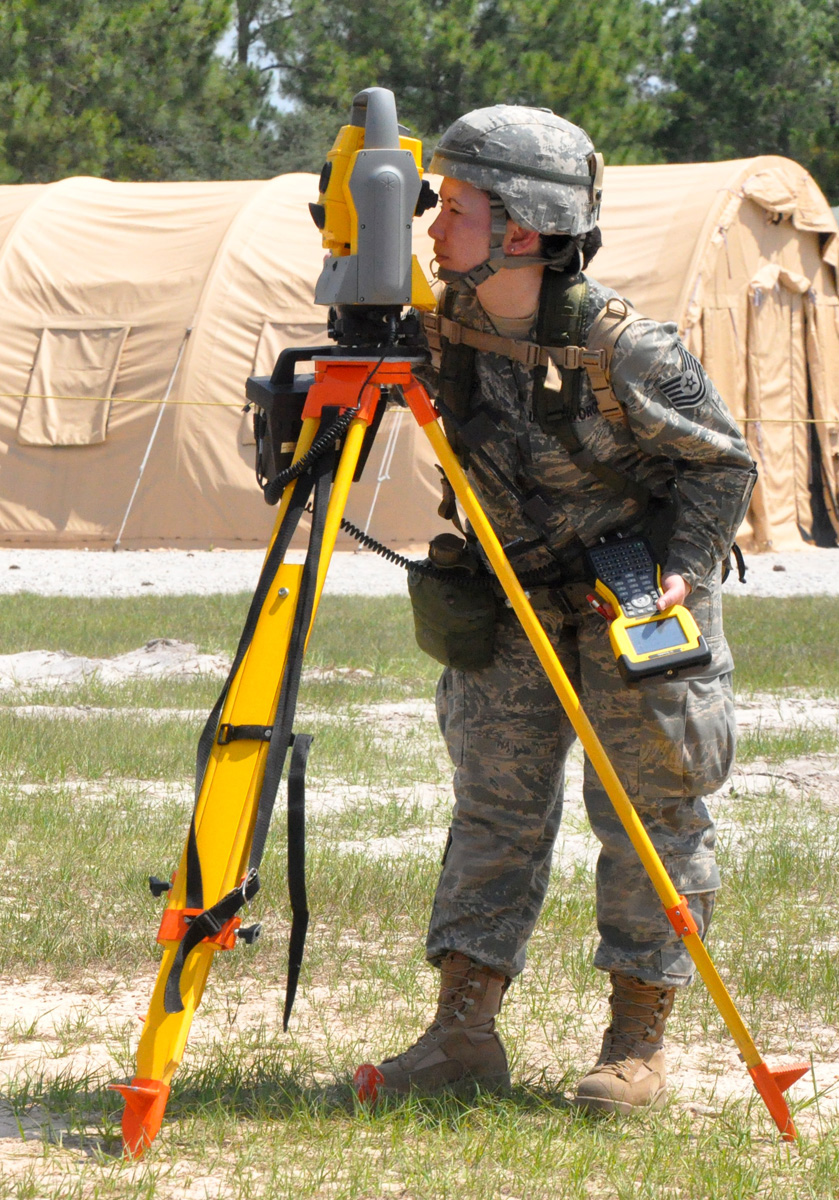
It's all about precision

Tech Sgt. Jennifer Greer uses surveying equipment to calculate the height of a water tower during a field exercise May 26, 2011, at Tyndall Air Force Base, Fla. Sergeant Greer, a reservist, is an engineering craftsman assigned to the 446th Civil Engineer Squadron at Joint Base Lewis-McChord, Wash.